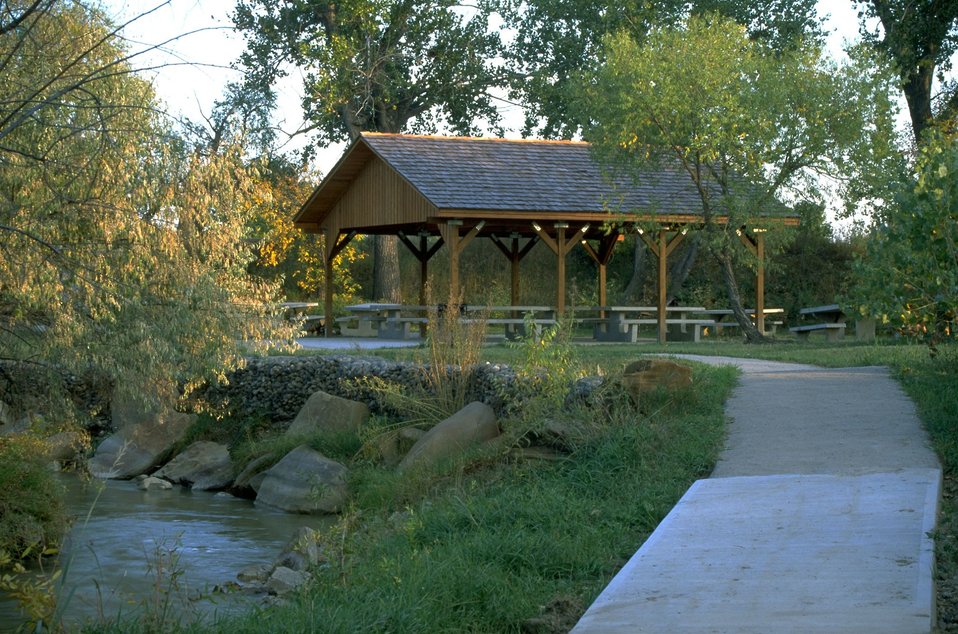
Group shelter and picnic area next to Jones Creek